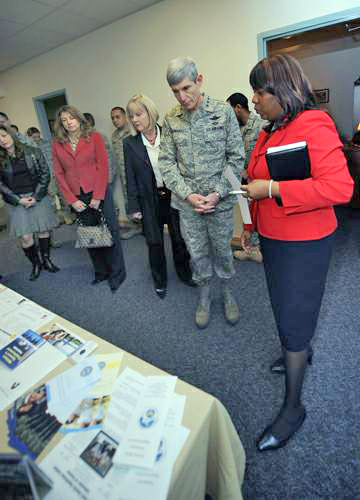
Holloman visit by chief of staff highlights contributions of America's Airmen

Air Force Chief of Staff Gen. Norton Schwartz looks at programs the Airman and Family Readiness Center offer as Shirley Bratton describes them Jan. 27, 2010, at Holloman Air Force Base, N.M. General Schwartz visited Holloman AFB to see Airmen and operations firsthand. Ms. Bratton is the Airman and Family Readiness Center director.